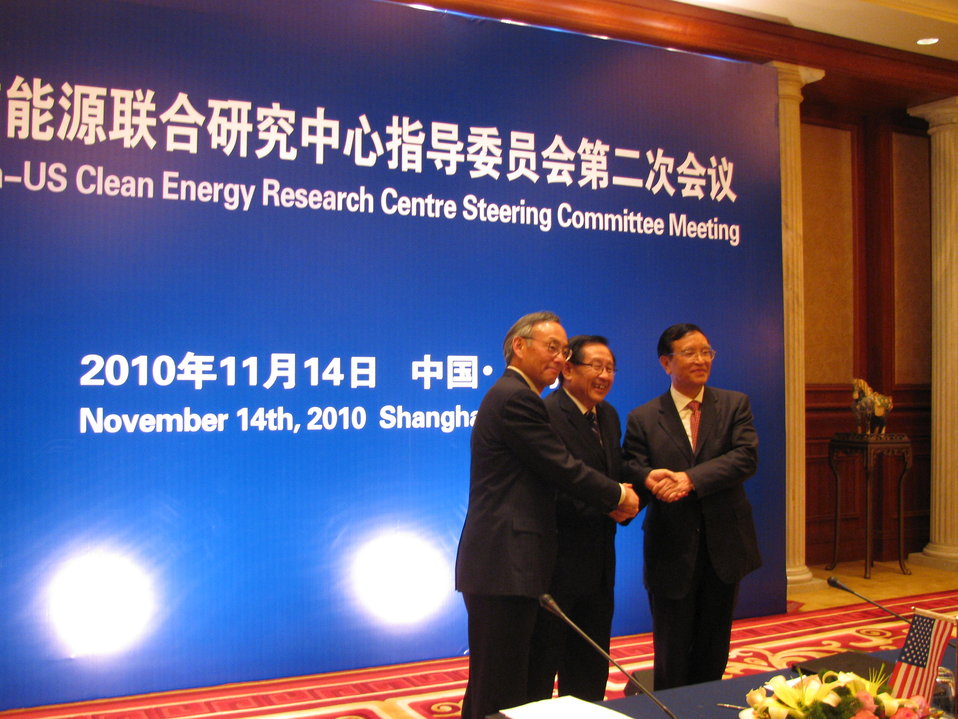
Shanghai 029